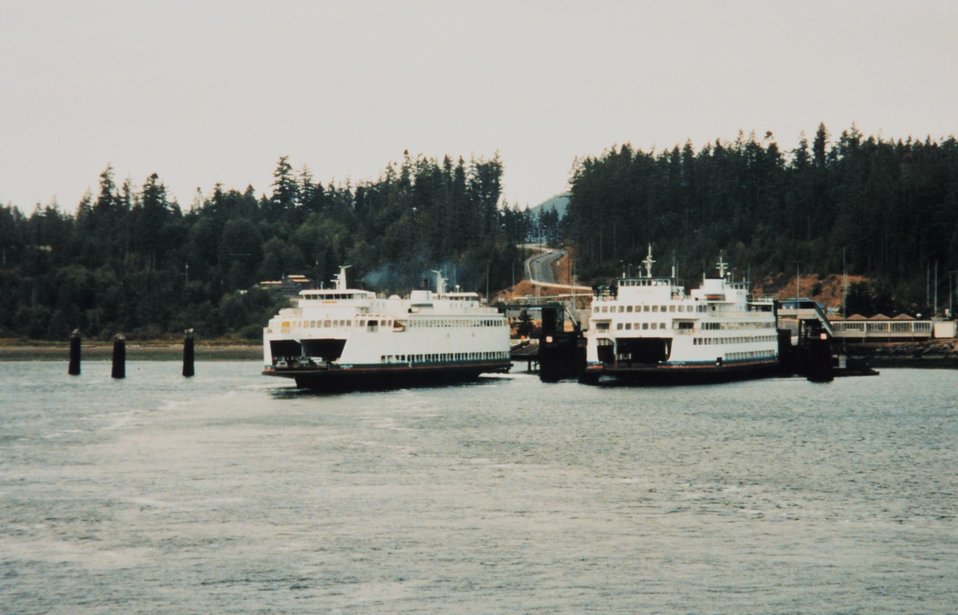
Puget Sound ferry boats